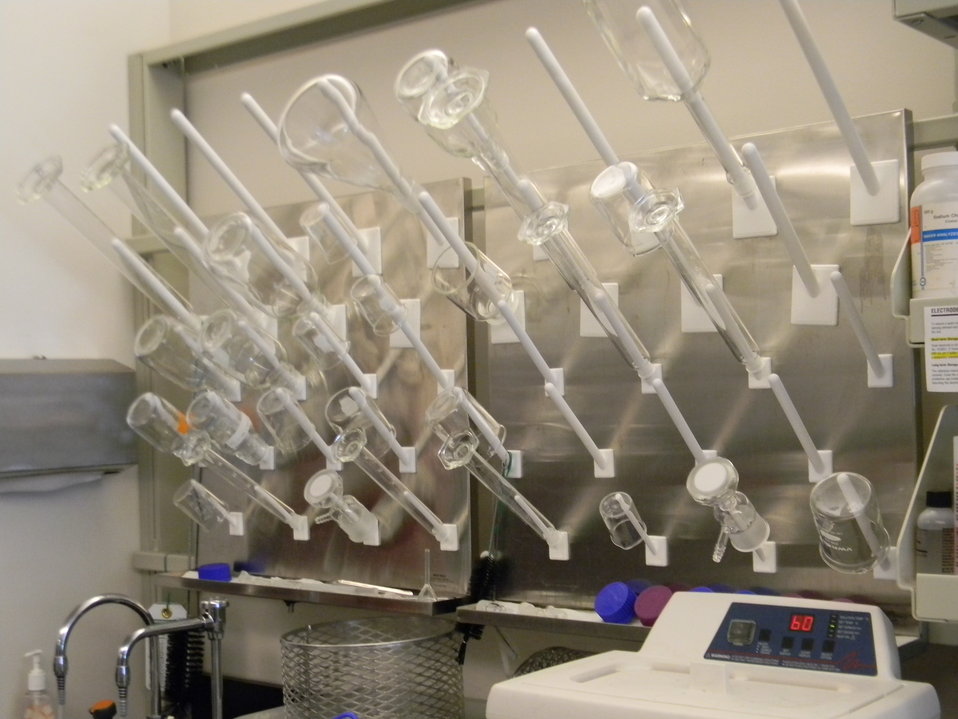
IRP beakers and flasks